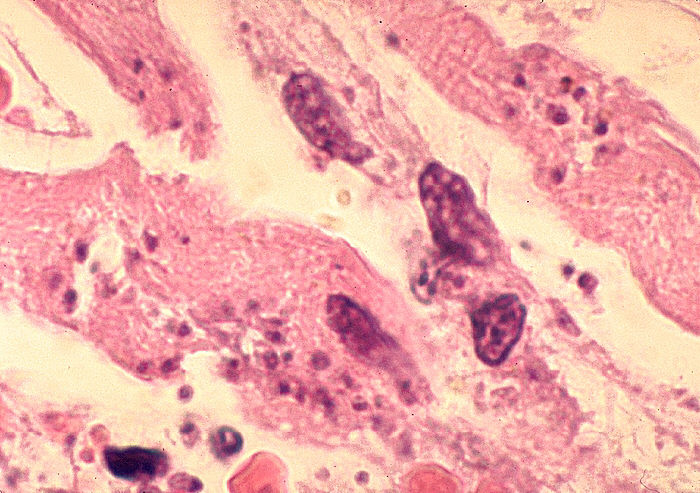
Histopathology of toxoplasmosis of heart in fatal AIDS.